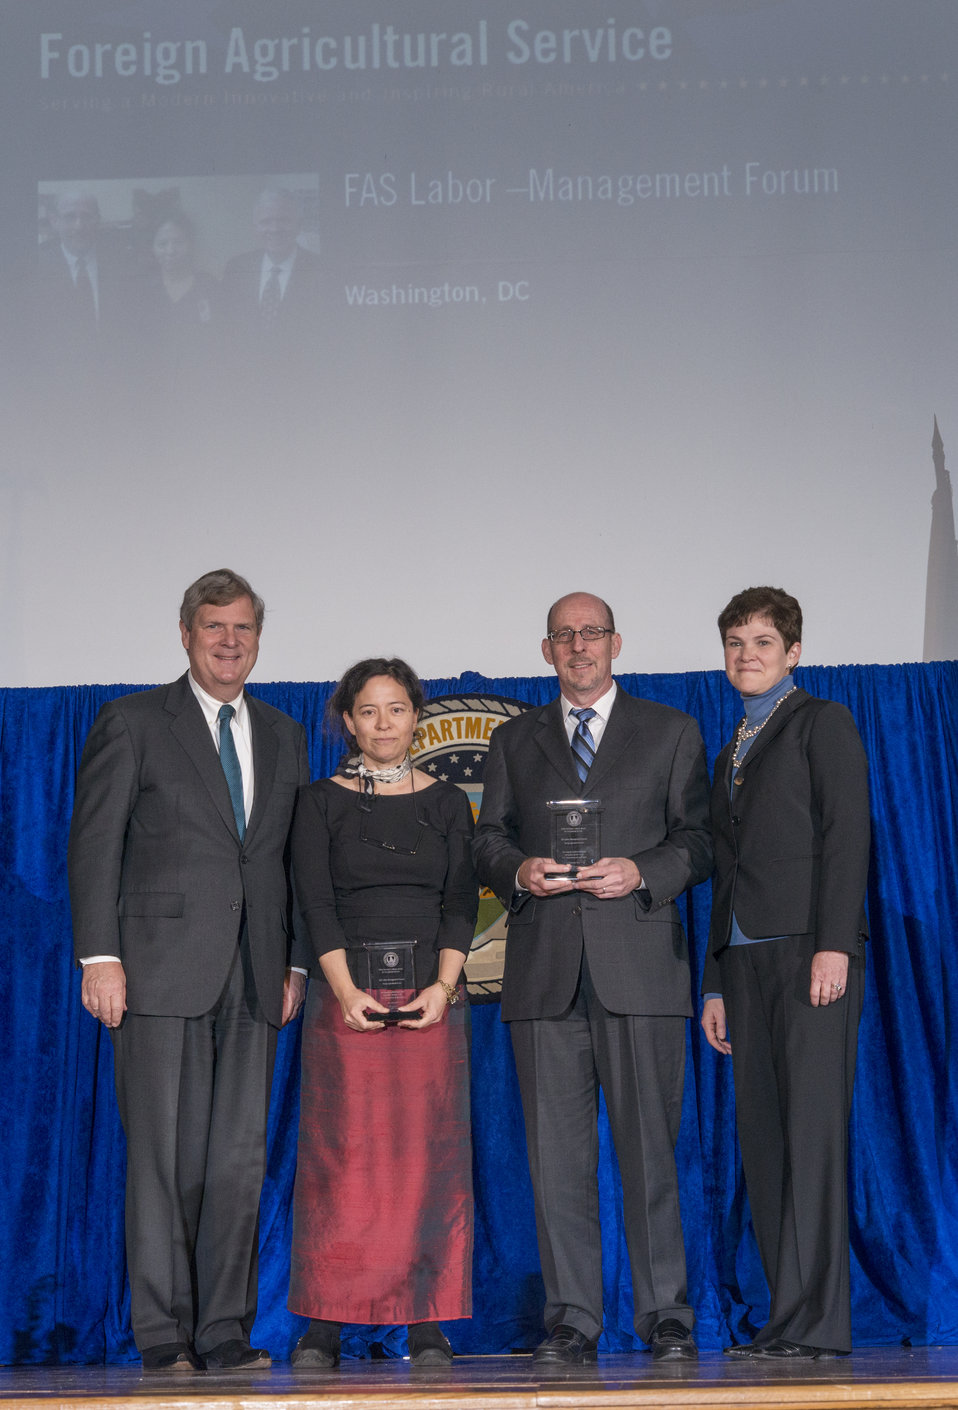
Agriculture Secretary Tom Vilsack and Agriculture Deputy Secretary Krysta Harden present the Secretary’s Honor Award to Foreign Agricultural Service (FAS) Labor Management Forum Group leaders Amy Freitas and David Mergen for significantly enhancing labor-management relations, resulting in greater efficiencies in achieving Agency goals and a more positive environment for all Agency employees at the 2013 Secretary's Honor Awards in the Jefferson Auditorium at the U.S. Department of Agriculture (USDA) in Washington, D.C. on Wednesday, Dec. 11, 2013.